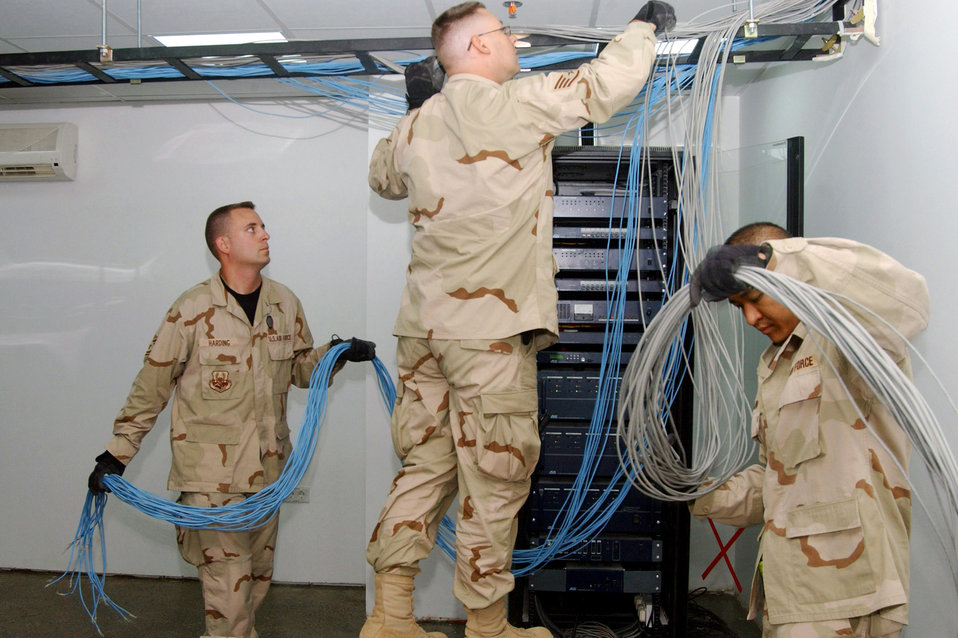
New hospital at Balad

Tech. Sgt. Jeremy Harding, Staff Sgt. Robert Luna and Tech. Sgt. Gary Guzman string data communication cables in the new Air Force Theater Hospital being built at Balad Air Base, Iraq. The new hospital is replacing the old tent structure. Throughout the transition, Airmen have pulled more than 50,000 feet of computer cables; set up computers, phones and paging systems and more. The new hospital is scheduled to open Aug. 3. The three NCOs are with the 332nd Expeditionary Medical Support Squadron.